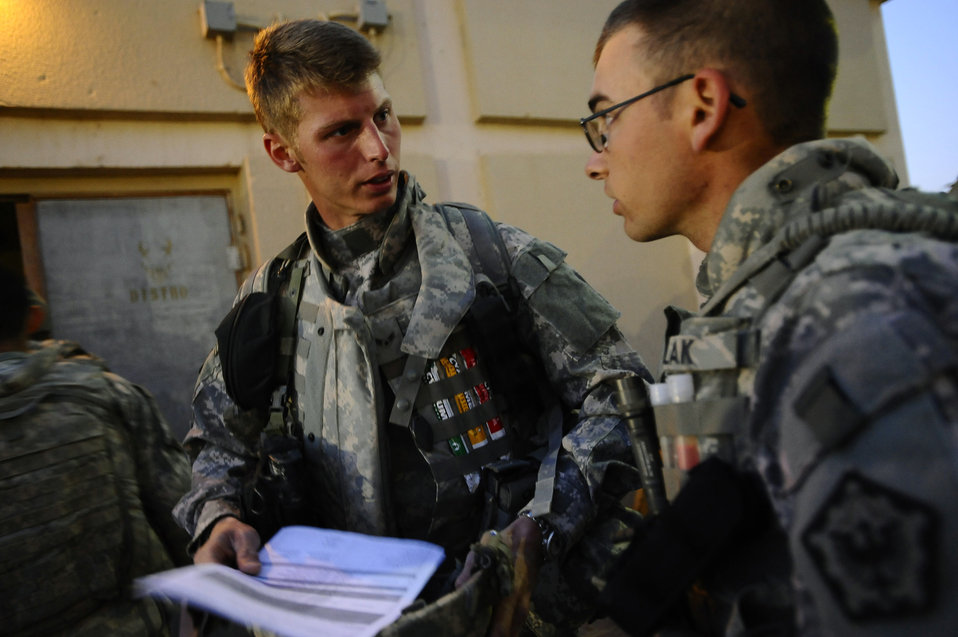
Air Force engineers answer the call from Soldiers in Iraq

Airmen 1st Class Tim Wise and Kenneth Bulak discuss a briefing prior to an outside-the-wire mission Dec. 11 at Joint Base Balad, Iraq. Airmen Wise and Bulak are assigned to the 732nd Expeditionary Civil Engineer Squadron Det. 6, which undertakes construction projects for the Army. Airman Wynne, a structural engineer and native of York, Pa., is deployed from Yokota Air Base, Japan. Airman Bulak, a pavements and equipment operator and native of Warren, Mass., is deployed from Hickam Air Force Base, Hawaii.